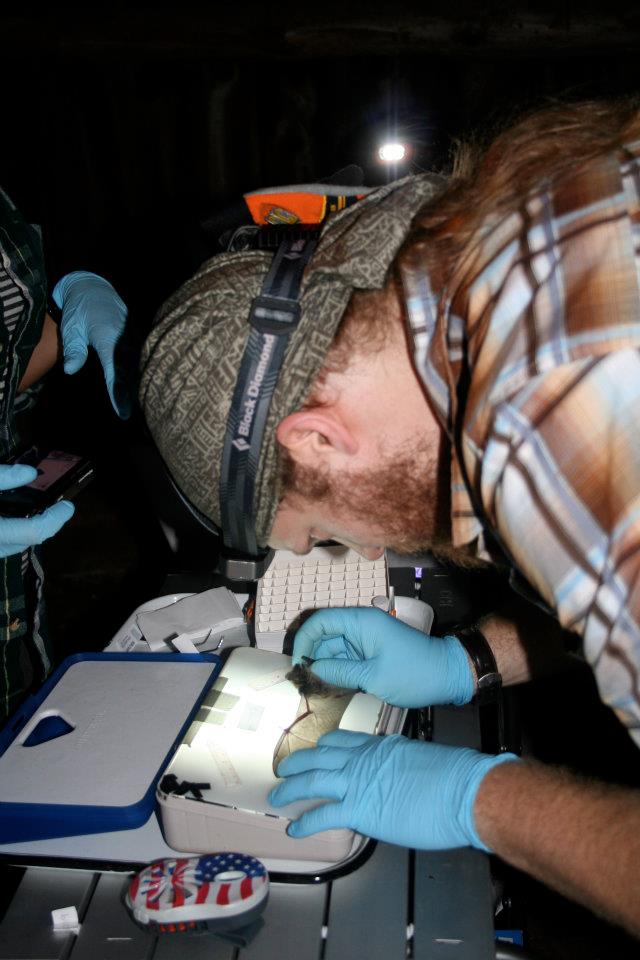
BU researcher Nate Fuller inspects bat wing